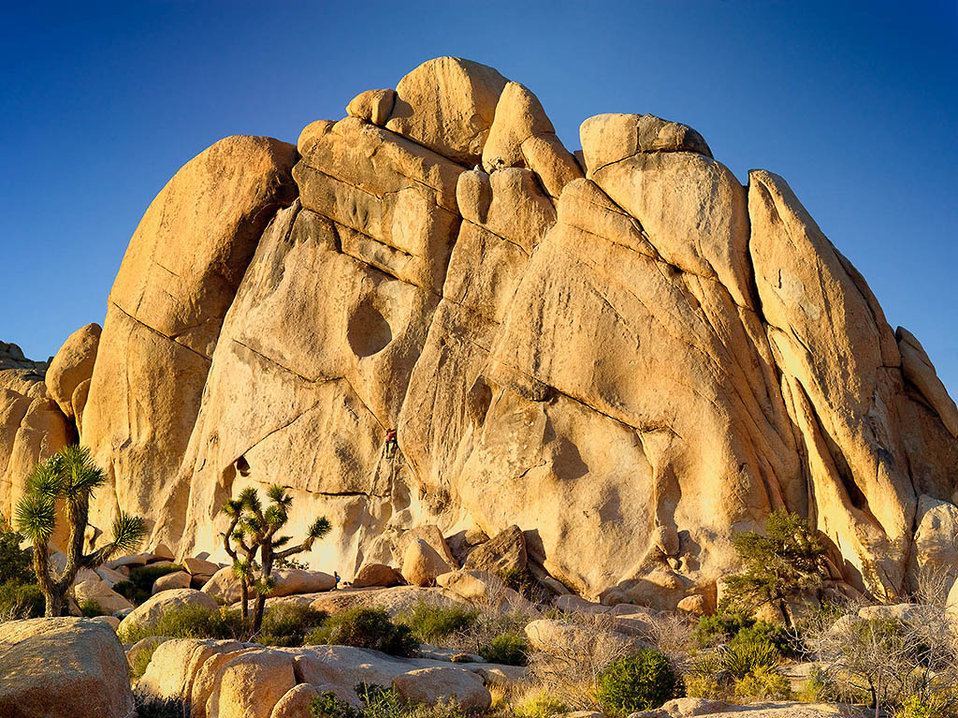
Old Woman Formation in Joshua Tree National Park. A weathered granite rock formation in the Mojave Desert of Southern California.